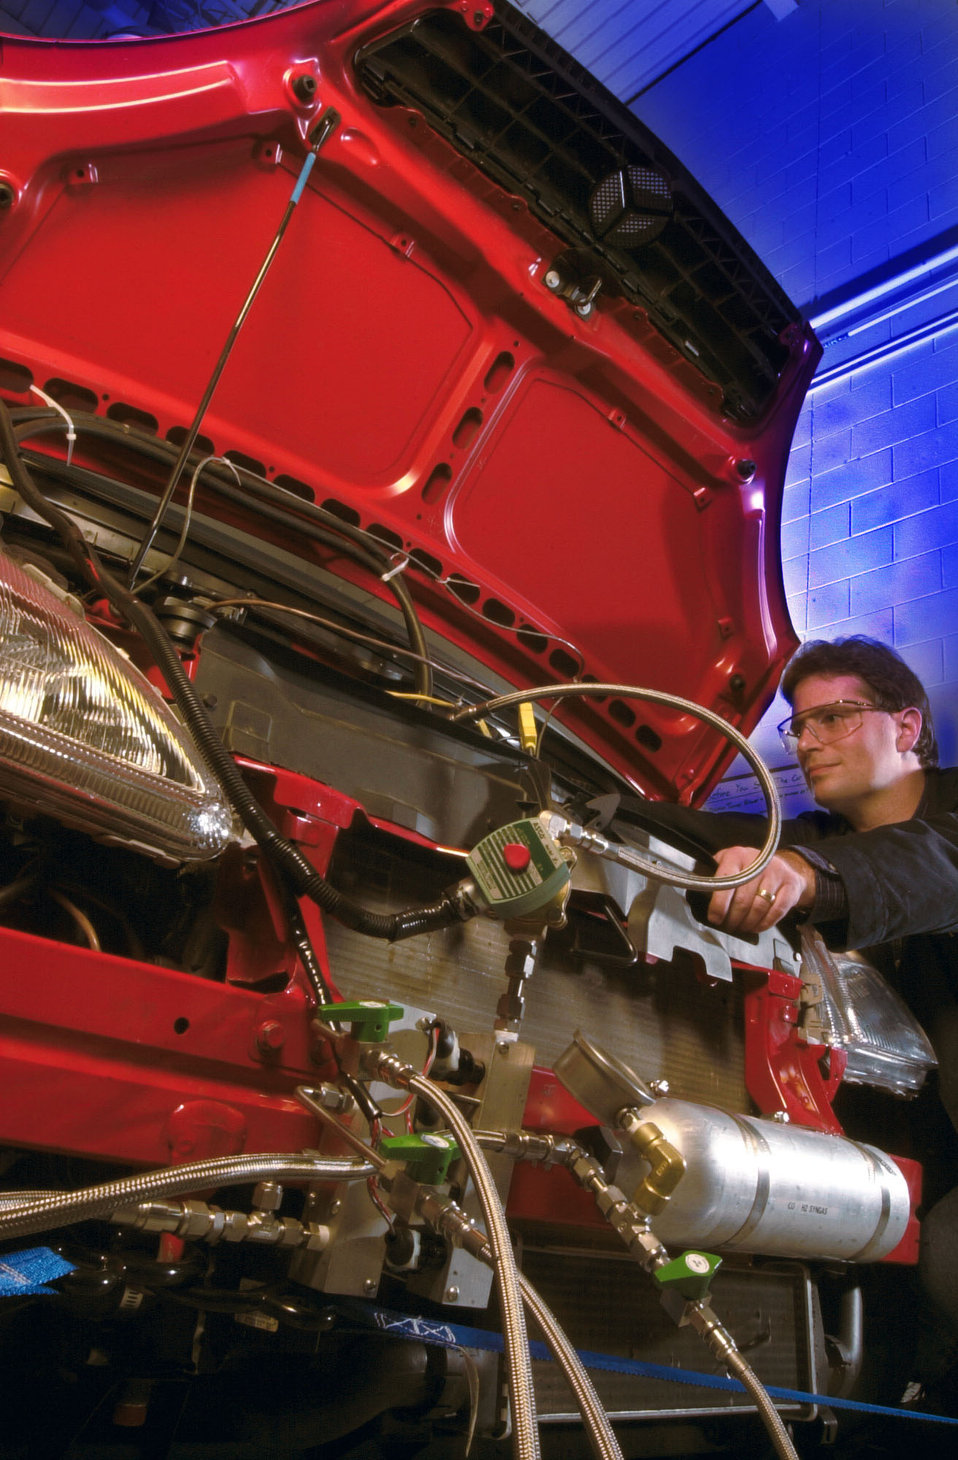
National Transportation Research Center Car Research

02-0005 DOE photo by Lynn Freeny Knoxville Tennessee 2002